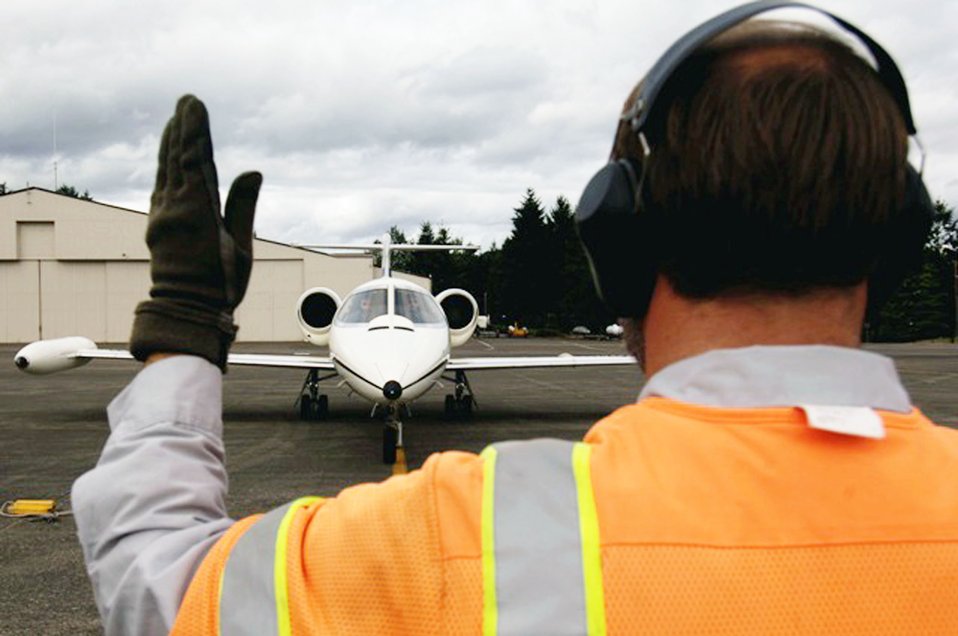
Planners keep Rodeo 2007 aircraft flying

A C-21 from the 311th Airlift Squadron at Peterson Air Force Base, Colo., is marshaled into McChord AFB, Wash., July 21 to participate in Rodeo 2007. Air Mobility Command's Rodeo 2007 is an airlift competition of U.S. and international mobility air forces.